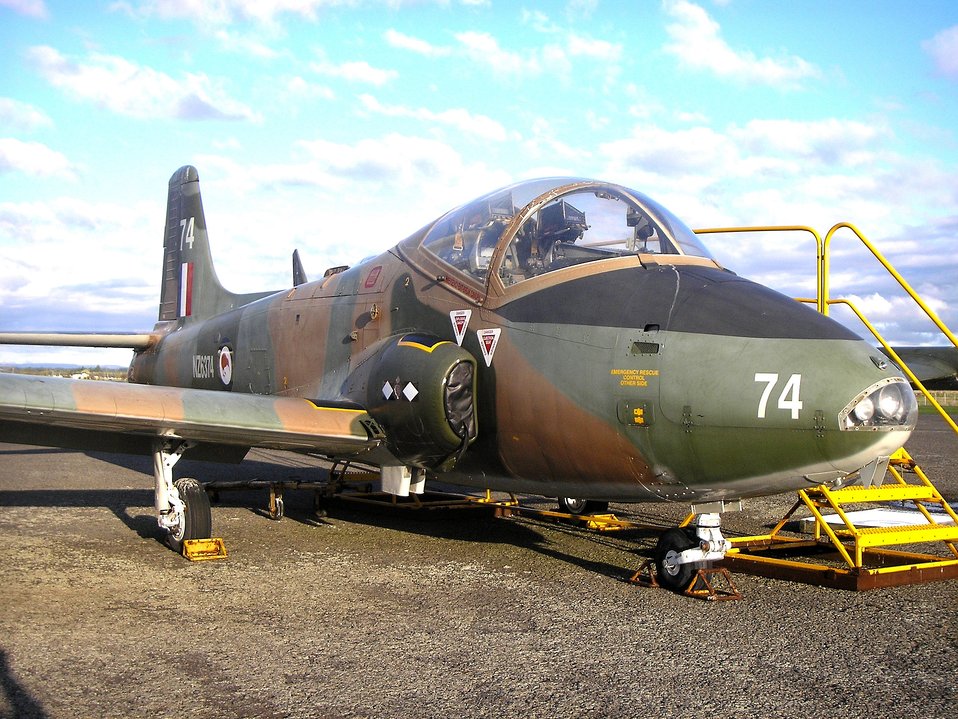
A BAC Strikemaster of the RNZAF, stored outside at Ohakea, photographed in May 2007, 14 years after the type was retired. Category:Images of military aircraft